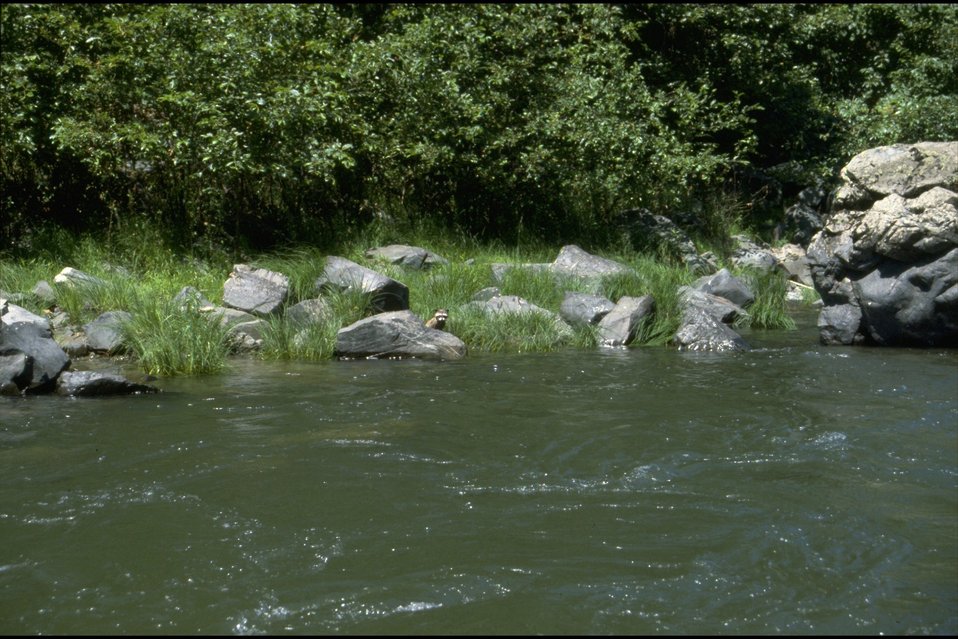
Rogue River - Racoon.